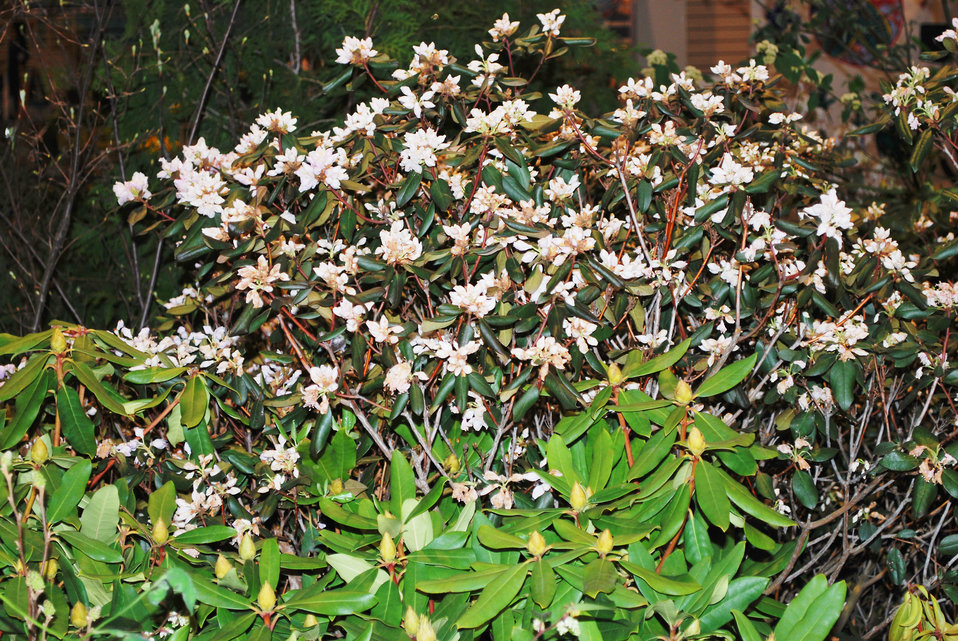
EPA's display at the Philadelphia Flower Show, 2014

Rhododendrons native to the mid-Atlantic region include R. minus, R. vaseyi, R. atlanticum, and R. periclymenoides. These plants added color and fragrance to our display at the 2014 Philadelphia Flower Show.